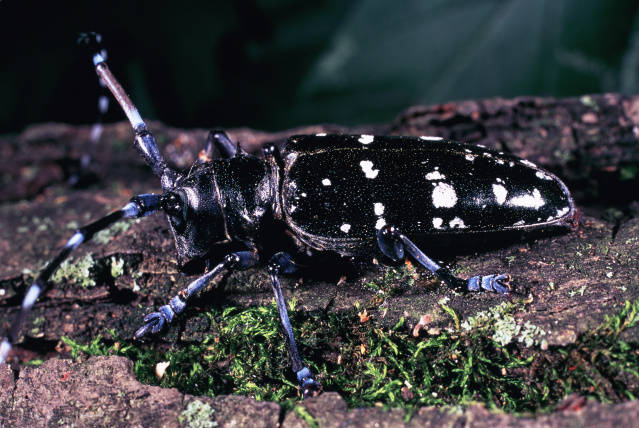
Asian Longhorn Beetle